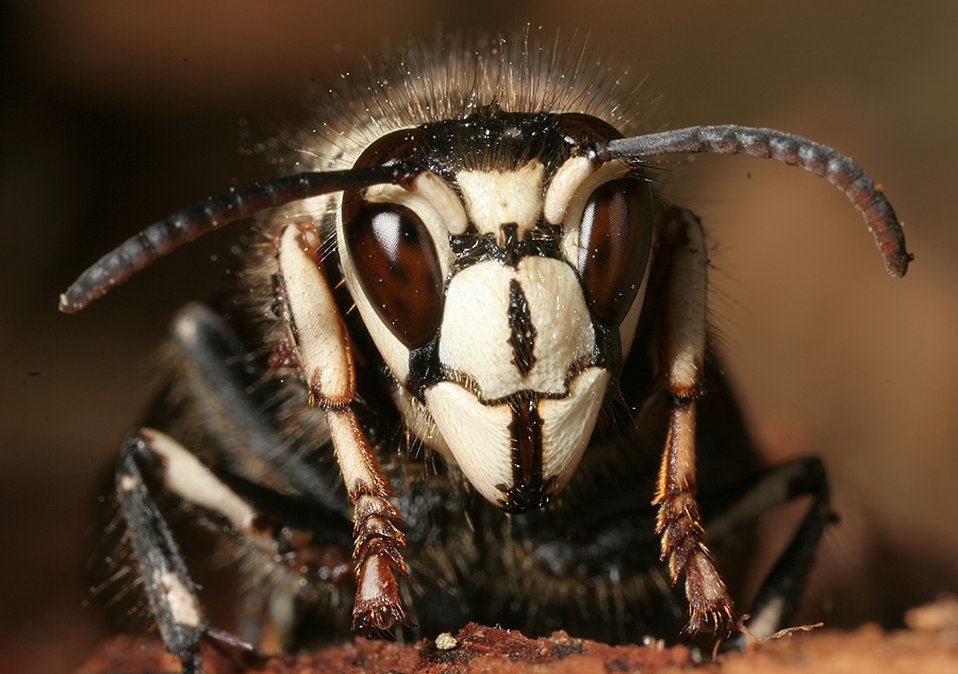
Photographed in Concord, Massachusetts, May, 2006 by Harvard University, Dept. of Environmental Health and Safety entomologist/environmental biologist, Dr. Gary Alpert, this image depicted an anterior view of a Bald-faced hornet, Dolichovespula maculata. Though named as a hornet, this wasp is not a true hornet from the genus, Vespa, but is more closely related to the yellow jackets, and is a member of of the genus Dolicovespula.